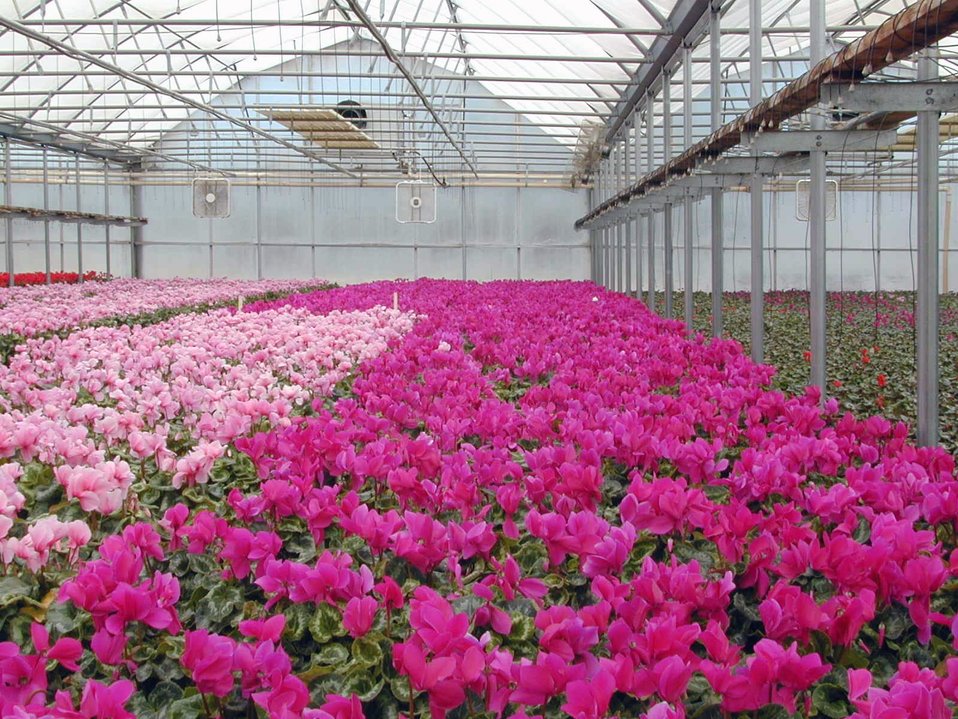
This is an example of a geothermal direct-use application in horticulture in Idaho.
The mountain states plants, Flint Greenhouse in Buhl, Idaho, uses a direct-use geothermal heating system to raise flowers such as these cyclamen.